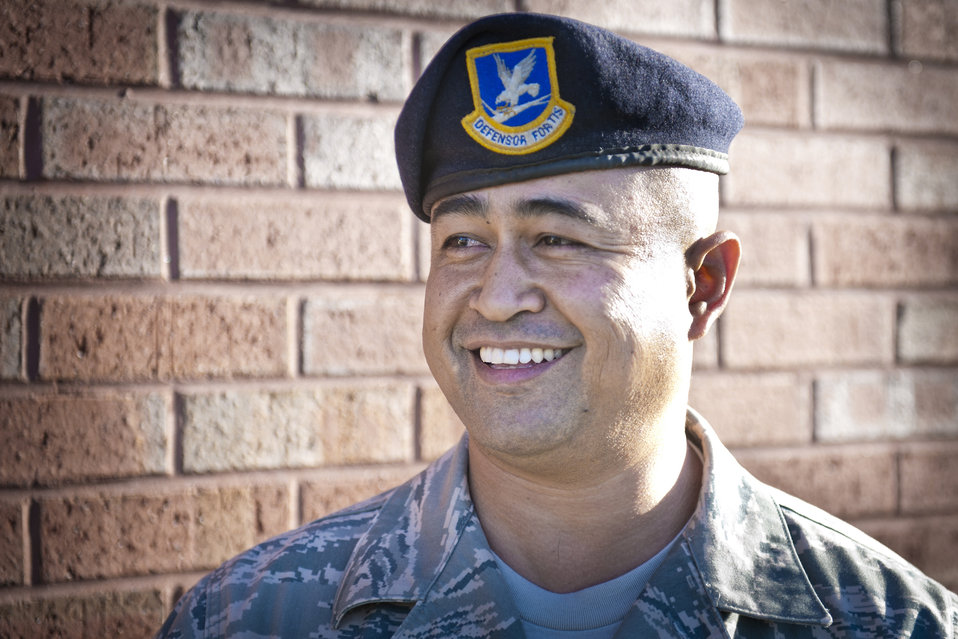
Mentoring the Future

Chief Master Sgt. Joseph Pritchard takes time out of his work day to crack a smile after being interviewed Nov. 11, 2010. Chief Pritchard has been in the Air Force for more than 22 years, but said he still has a lot of knowledge to gather and pass on. He has had a passion for security forces since childhood. Chief Pritchard is the 23rd Security Forces Squadron security forces manager.